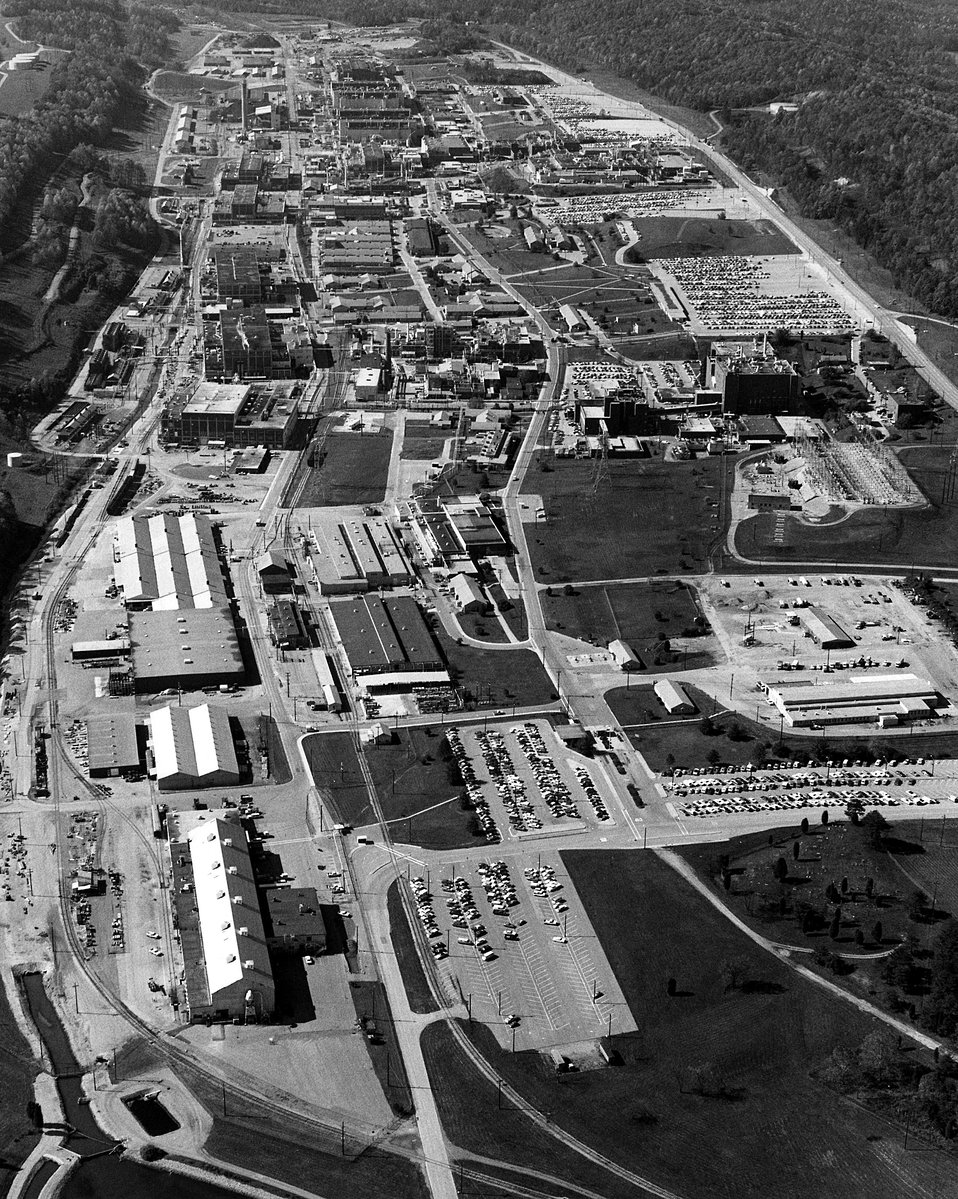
The Oak Ridge Y-12 Plant, Oak Ridge, Tennessee, is one of the largest and most versatile of the U.S. Department of Energy's facilities, carries out production and development programs vital to the nation's nuclear energy. Circa 1976.